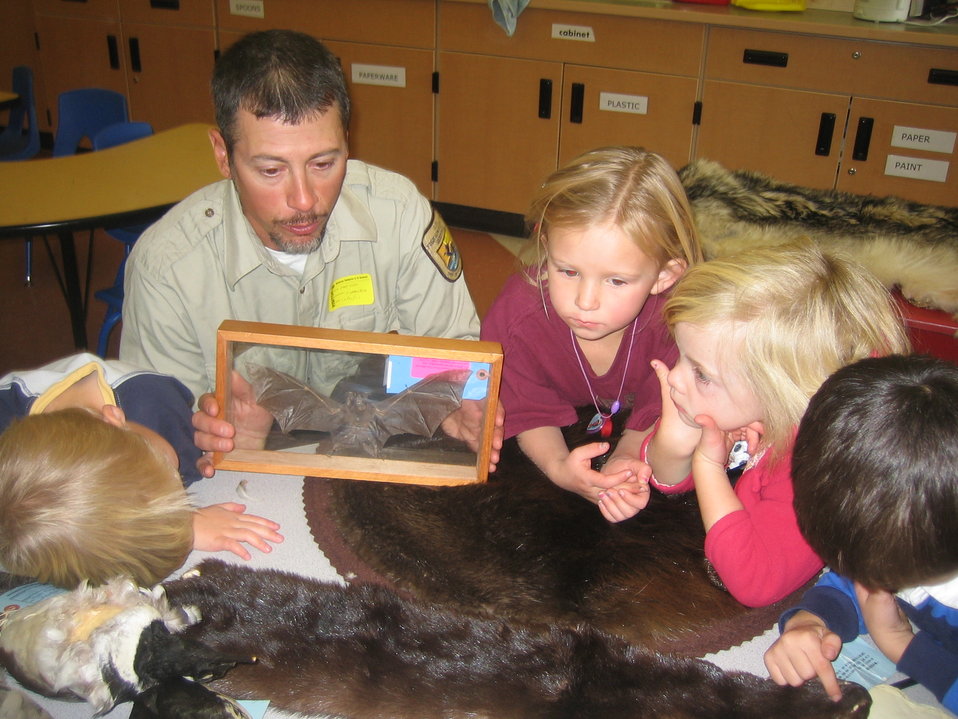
Scientists in the Community Program

U.S. Fish and Wildlife Service Mountain-Prairie Region Deputy ARD for External Affairs, Matt Kales, introduces early childhood education students at William Roberts Elementary School in Denver to some of Colorado's native and historic wildlife species.